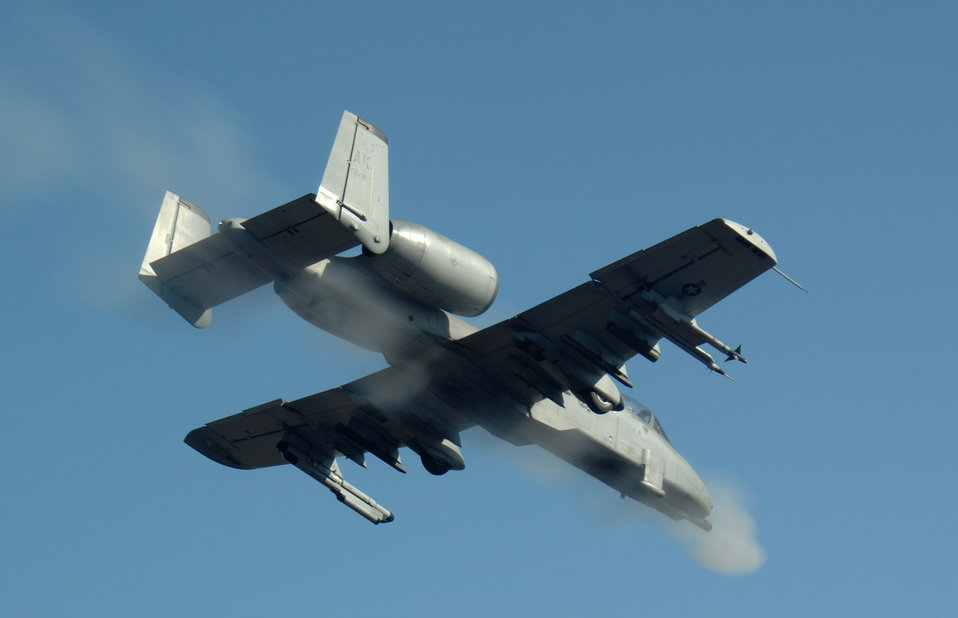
Airpower summary for Oct. 9, 2007

A-10 Thunderbolt IIs, like one shown here firing a GAU-8 30mm cannon at 3,900 rounds per minute, provide close-air-support for coalition troops supporting Operation Enduring Freedom.